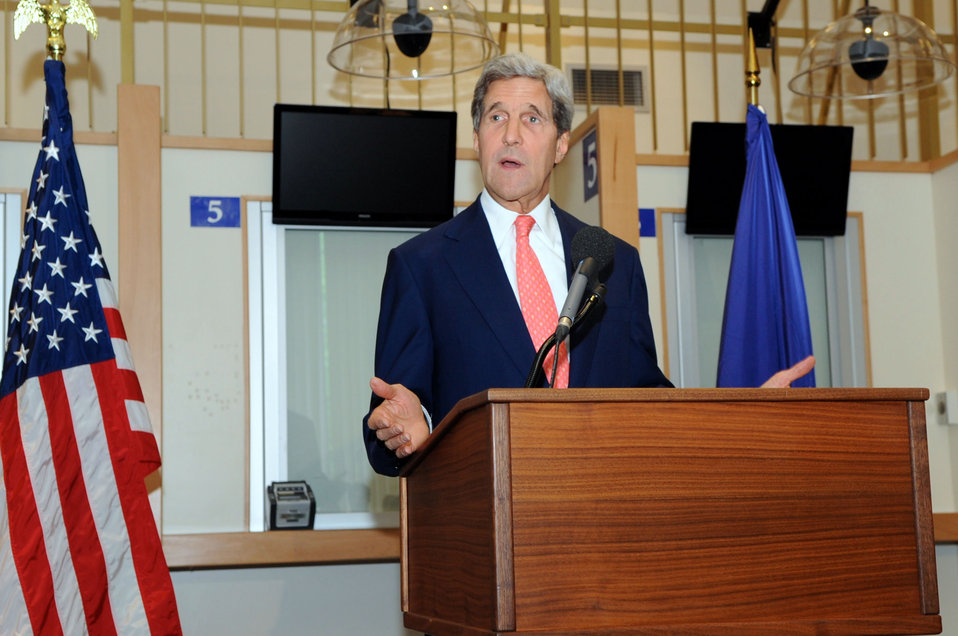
Secretary Kerry Announces Same-Sex Couple Visa Change

U.S. Secretary of State John Kerry addresses employees at the U.S. Embassy in London, United Kingdom, on August 2, 2013, to announce that the U.S. Department of State would immediately start granting visas to same-sex couples just as it does for opposite-sex couples, after the U.S. Supreme Court overturned the Defense of Marriage Act.